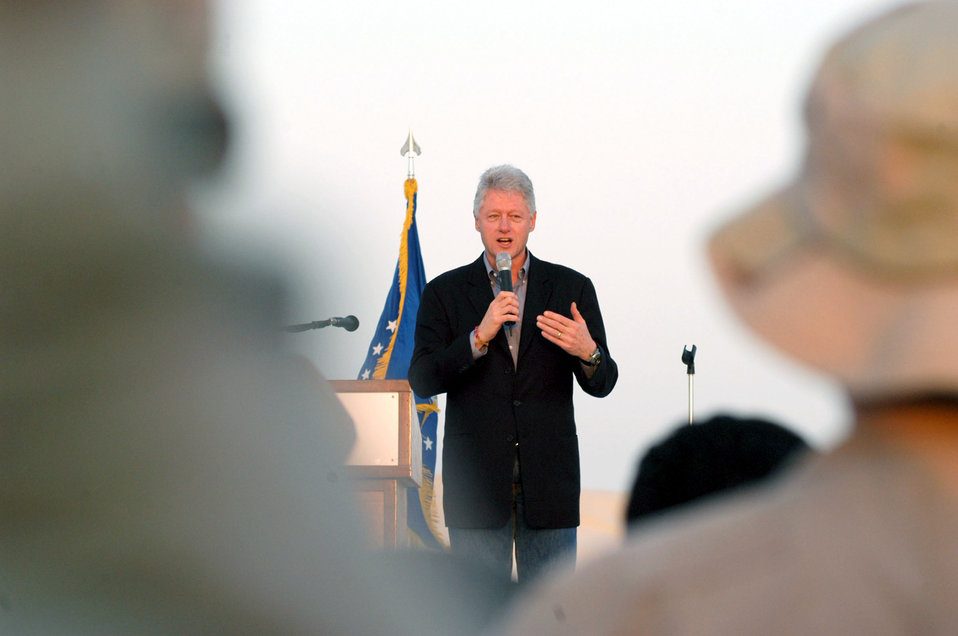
Paying a visit

SOUTHWEST ASIA -- Former President Bill Clinton speaks to airmen at a deployed location Jan. 12. The former president spent more than one hour shaking hands, signing mementos and posing for photographs during his visit.